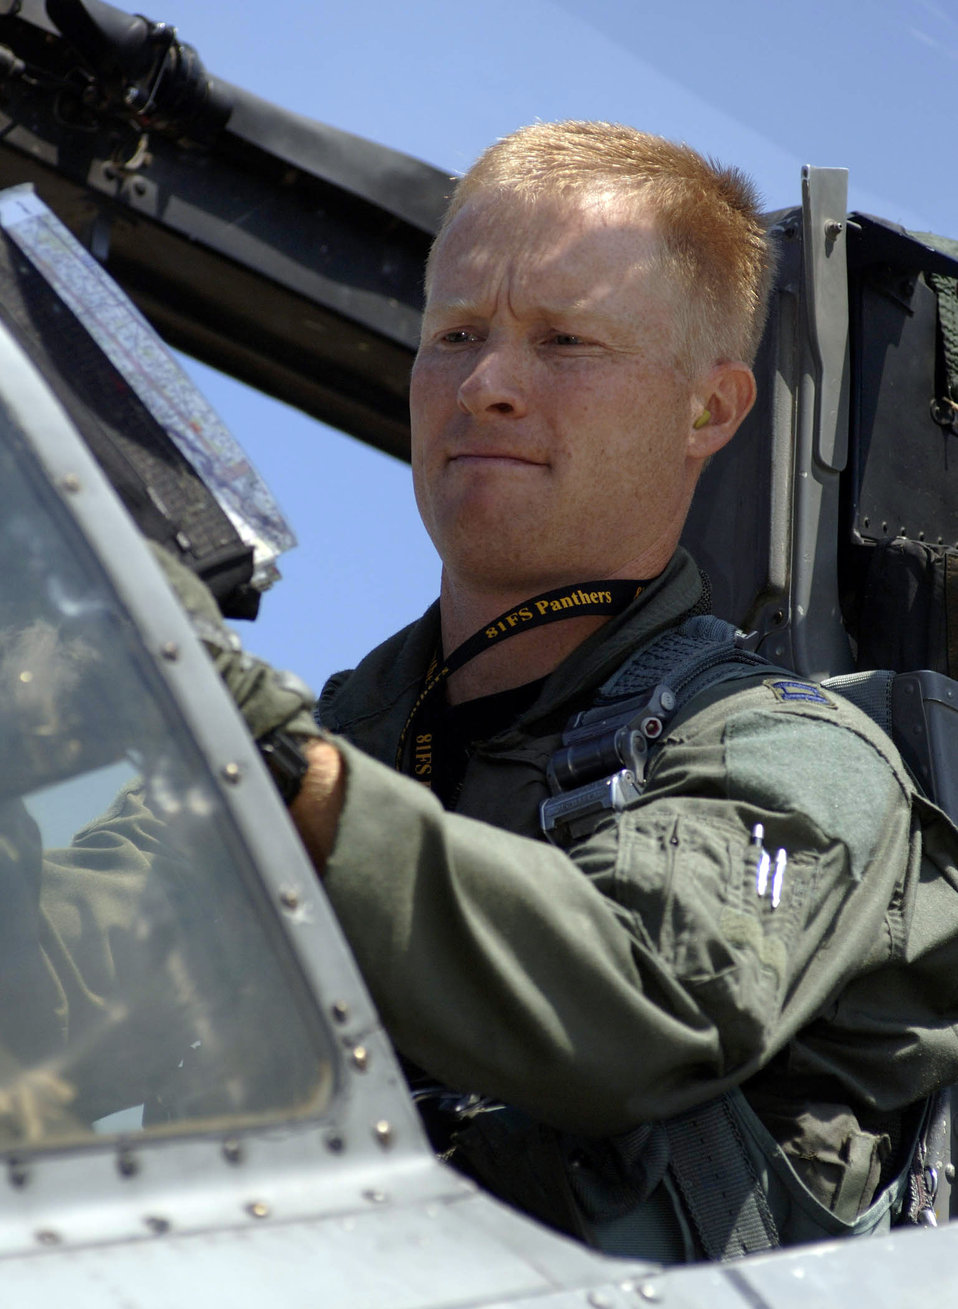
Waiting for the 'all clear'

SPANGDAHLEM AIR BASE, Germany -- Capt. Jason Jensen prepares for his next sortie from here. He is an A-10 Thunderbolt II pilot with the 81st Fighter Squadron.